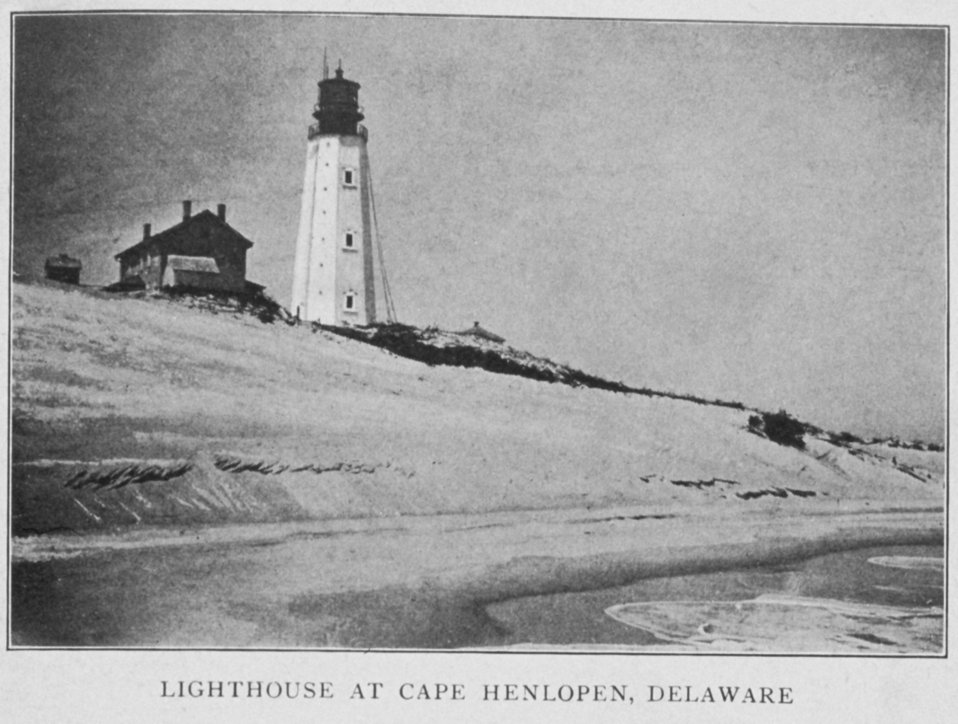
Lighthouse at Cape Henlopen, Delaware. In: 'Lighthouses and Lightships of the United States' by George R. Putnam, p. 14, 1917. Houghton Mifflin and Company, Boston. Library Call No. 527.7 P98.